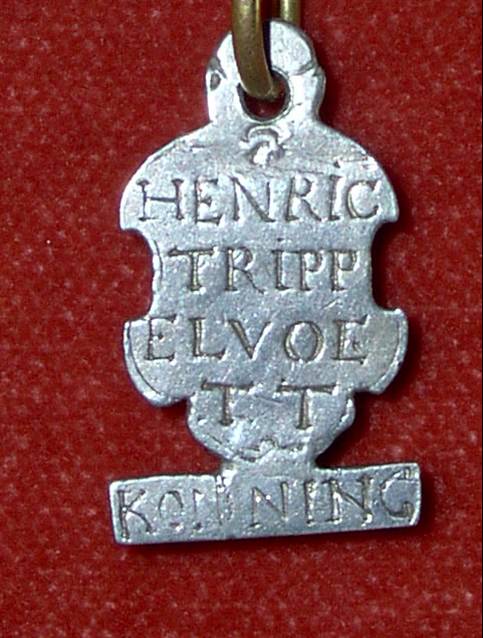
Deutsch: ältestes Schildchen (Vorderseite) der Königskette der Liebfrauen-Schützenbruderschaft von 1630 Münster, König Henric Trippelfoett, Gerichtsschreiber